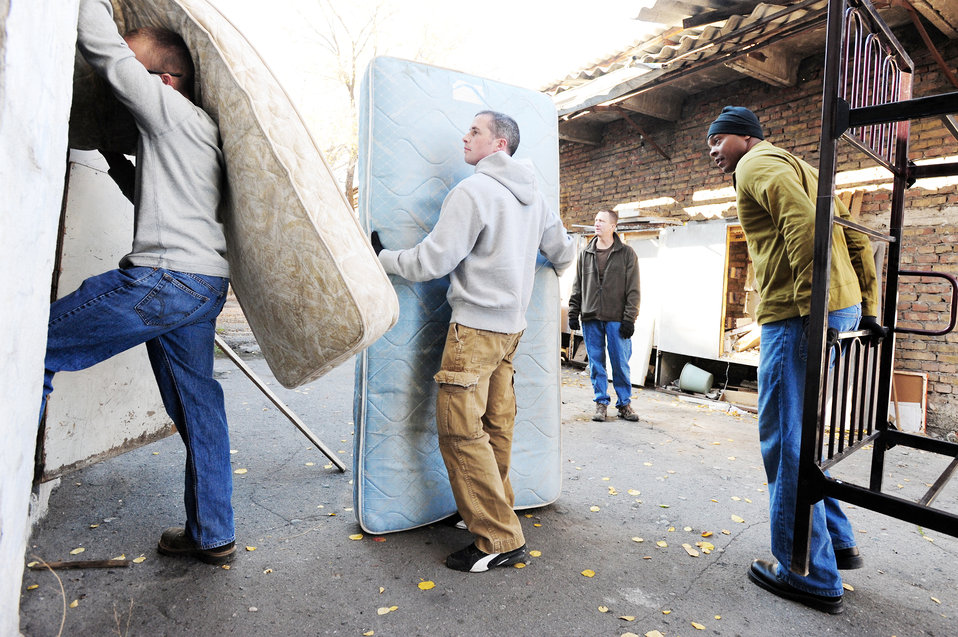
Manas Airmen donate necessities to hospital, school in Kyrgyzstan

Airmen stand in a line with mattresses and bed frames to donate to the Bishkek Center for Mental Health Oct. 31, 2009, at Bishkek, Kyrgyzstan. The Transit Center at Manas had an abundance of bedding and shared the items with their host nation neighbors.